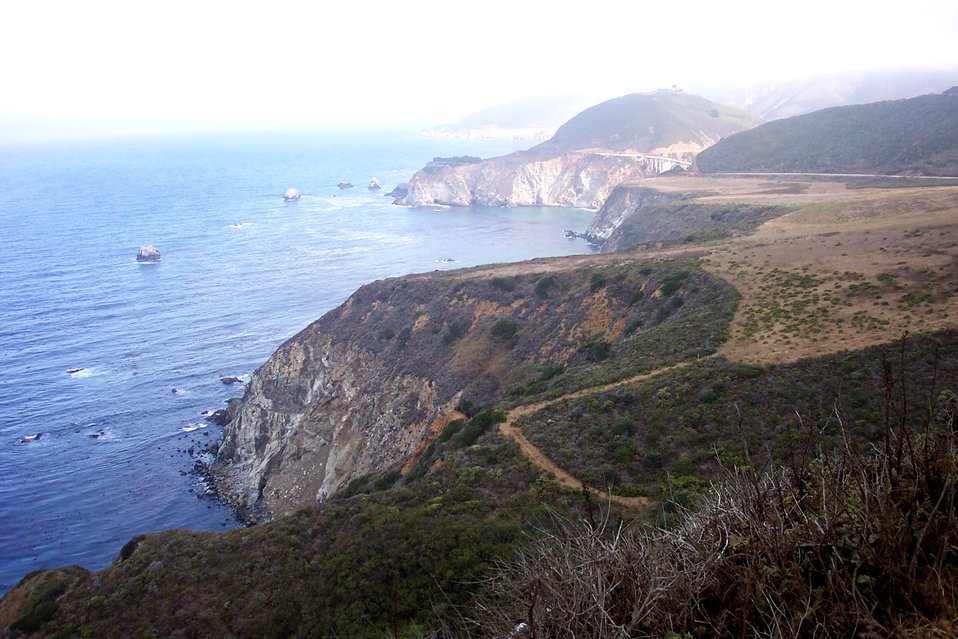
Looking north along the Big Sur coastline toward the Bixby Canyon Bridge.